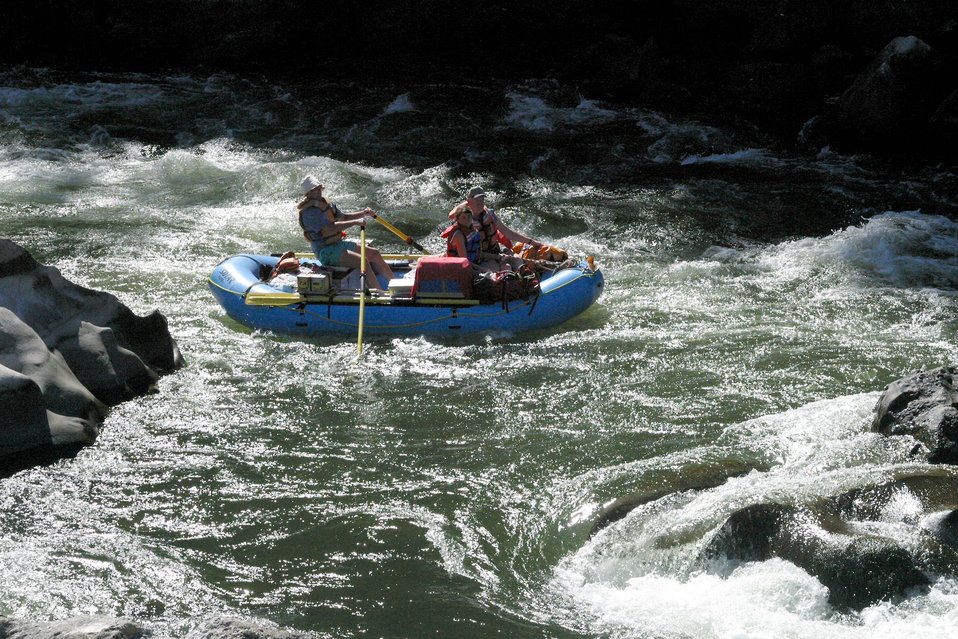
Boaters negotiate Blossom Rapids.